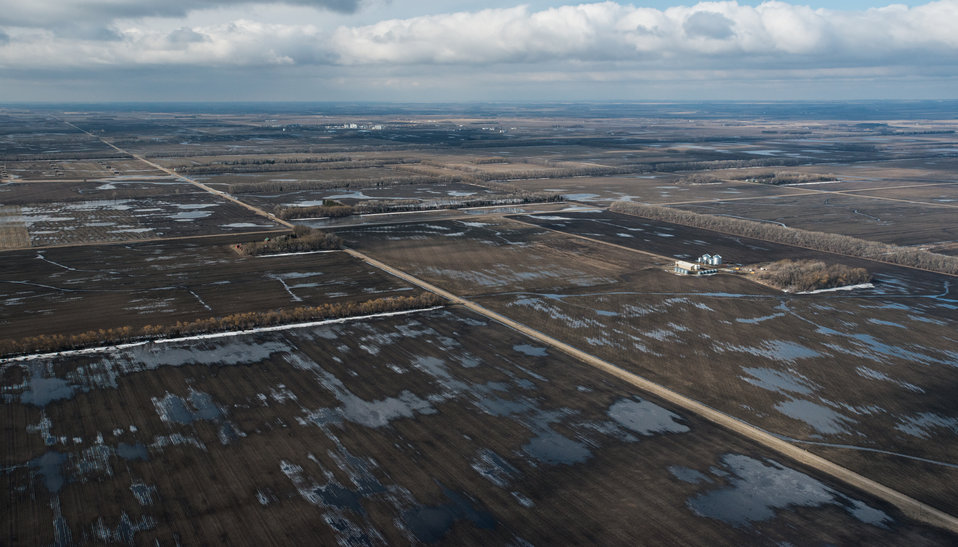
Wetlands and windbreaks along the Turtle River Watershed in Grand Forks County, ND, part of the Red River basin, on Wednesday, May 1, 2013.